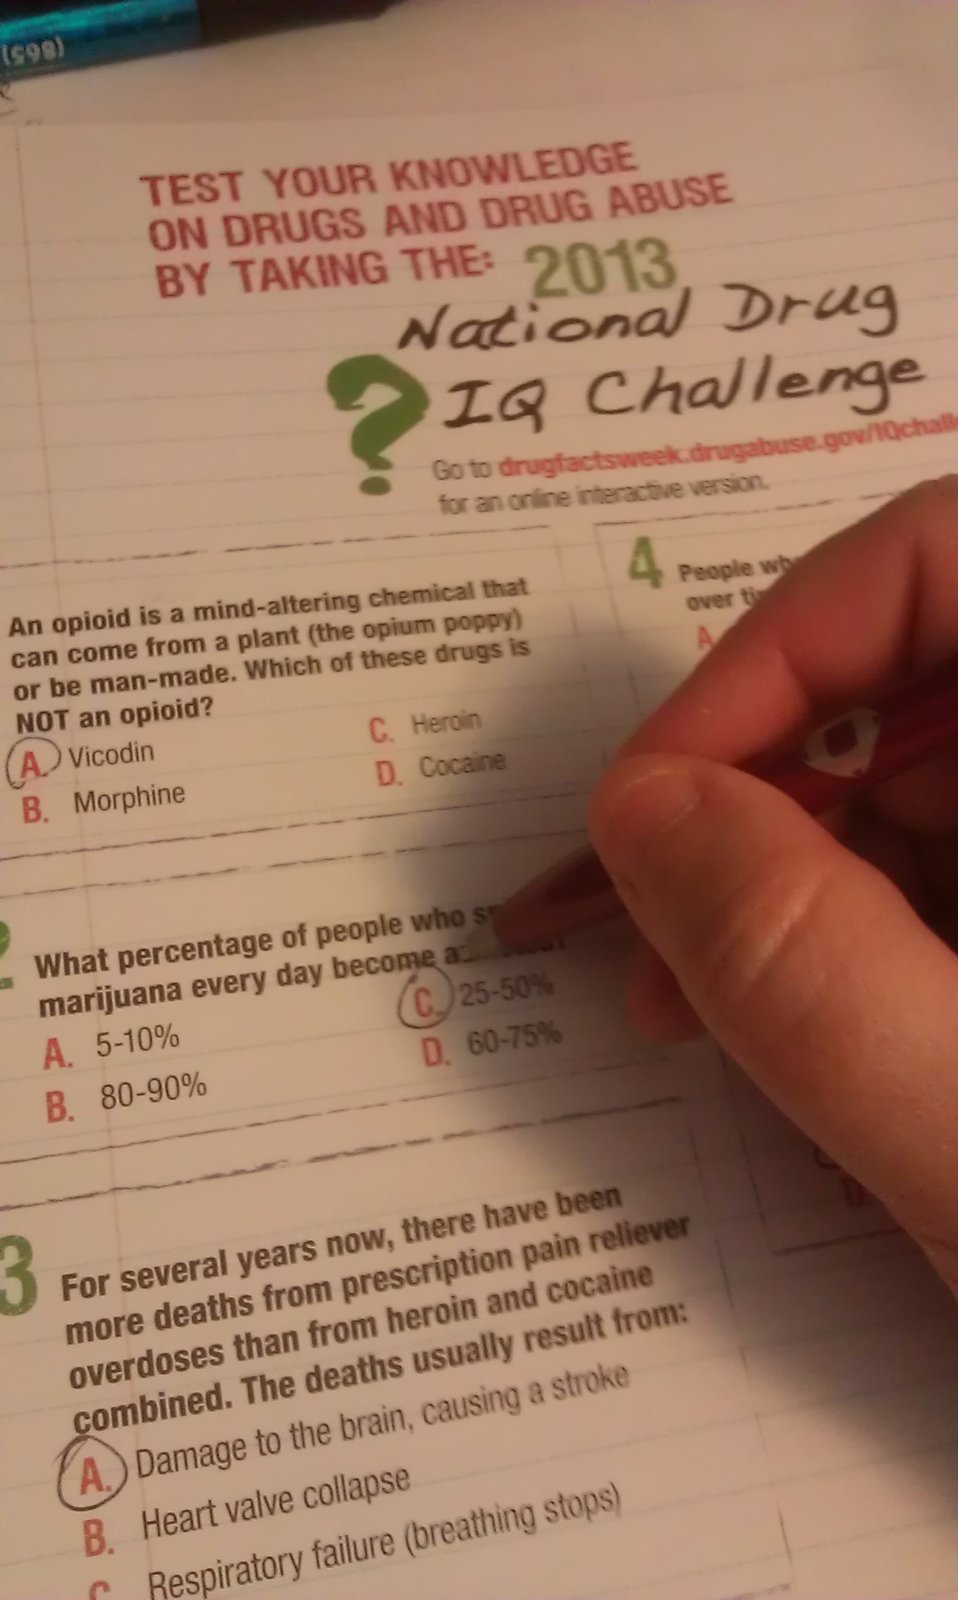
Tennessee's IQ Challenge NDFW 2013

Kingston,Tenn. Roane County Anti-Drug Coalition, 2013 National Drug Facts Week activities.